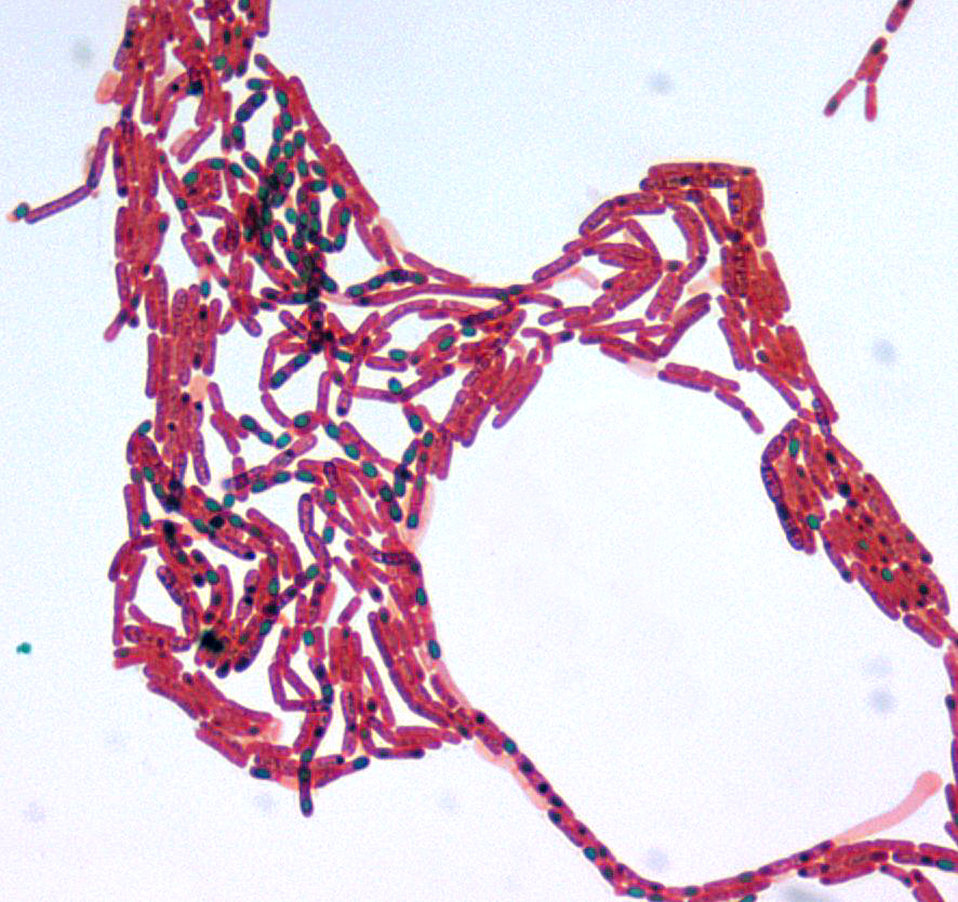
Bacillus species Malachite Green spore stain.